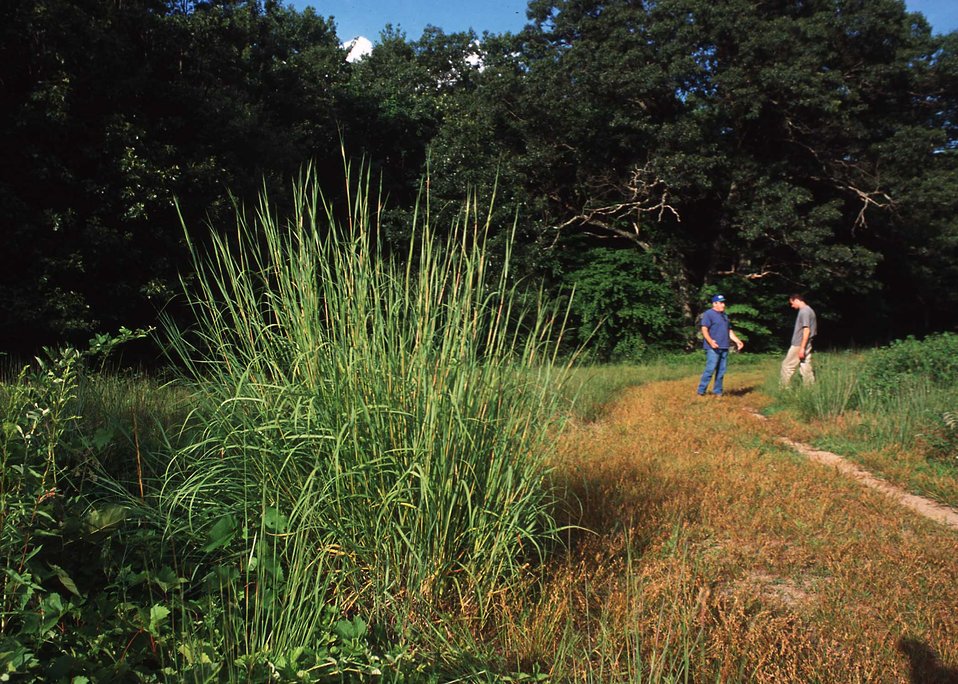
NRCS Conservationist, Alan Page, and a landowner reviewing a warm season grassland habitat restoration project in Hartford County. Big Bluestem grass is in the foreground.